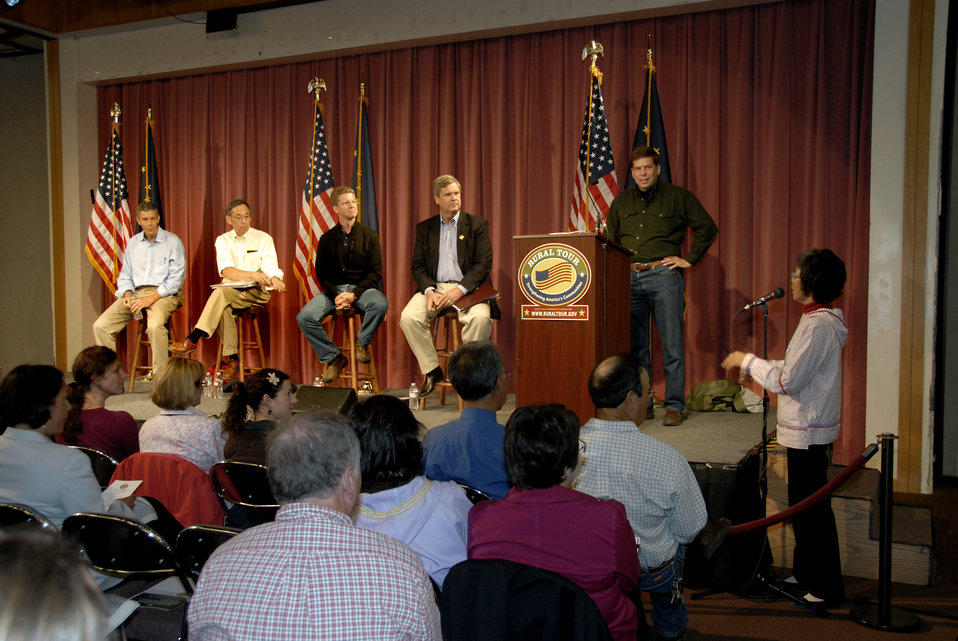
Rural Tour 0041

Rural Tour Alaska Aug 2009